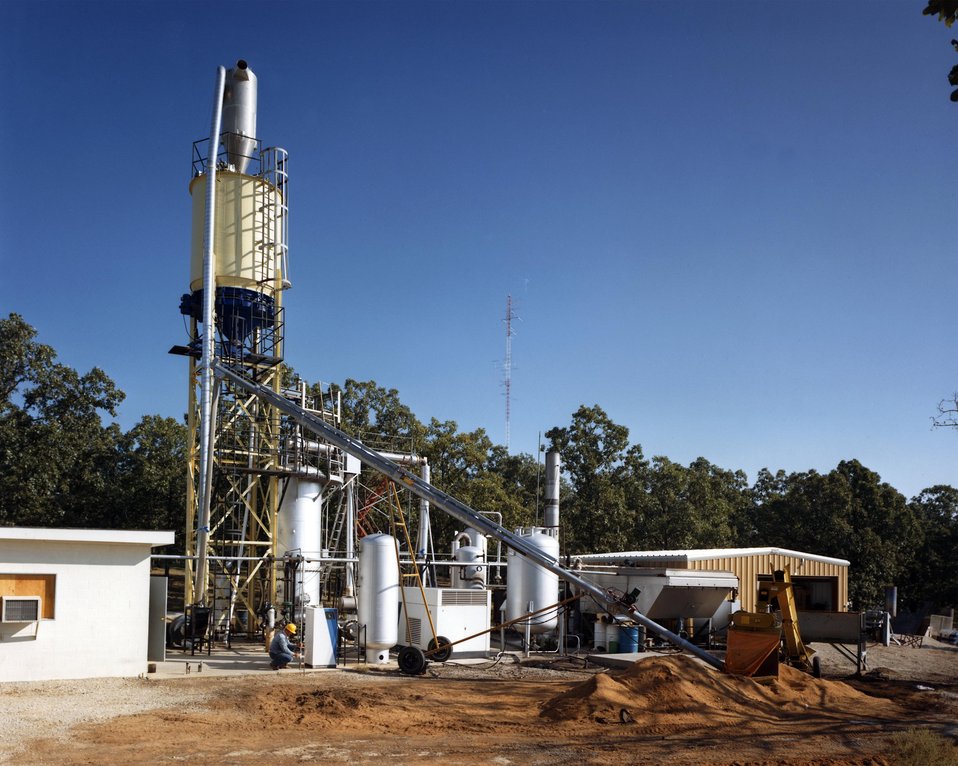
OVERVIEW OF THE UNIVERSITY OF MISSOURI'S WOOD GASIFIER.

THE WOOD GASIFIER AT THE UNIVERSITY OF MISSOURI IS PART OF THE PROGRAM TO DEVELOP BIOMASS AS A FUEL SOURCE. WOOD CAN BE PROCESSED TO PRODUCE MEDIUM BTU GAS THAT CAN BE USED DIRECTLY OR UPGRADED INTO SUCH FUELS AS SYNTHETIC NATURAL GAS, METHANOL, AMMONIA, AND PETROCHEMICAL SUBSTITUTES. THE MAIN OBJECTIVE OF THIS PROGRAM IS TO IMPROVE CONVERSION EFFICIENCY AND PRODUCTIVITY AND REDUCE PRODUCTION COSTS OF THE GASIFICATION PROCESS.